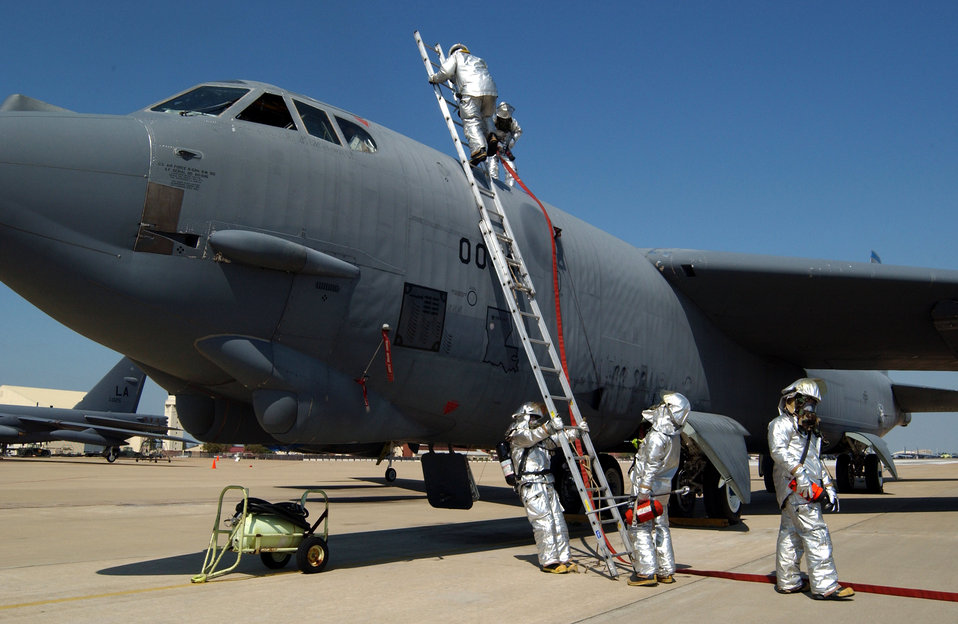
Everybody out!

BARKSDALE AIR FORCE BASE, La. -- Firefighters prepare to remove a crew from a B-52 Stratofortress during an exercise here April 2. The firefighters are assigned to the 2nd Civil Engineer Squadron.